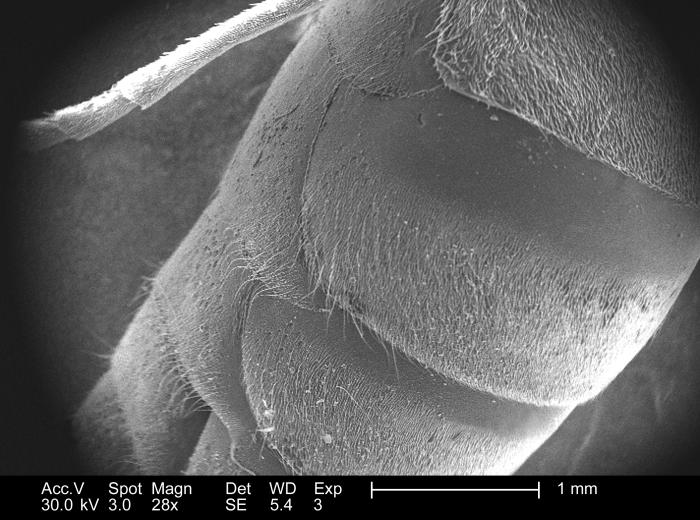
This 2005 scanning electron micrograph (SEM) revealed some of the morphologic details exhibited by an unidentified hymenopteran insect found deceased in the Decatur, Georgia suburbs. The Order of Hymenoptera includes bees, wasps, ants, and sawflies. Note the overlapping plate-like construct of this insect's exoskeletal protective covering. The large central structure represents a portion of the abdominal region, while in the background, one of its six jointed legs is also visible.